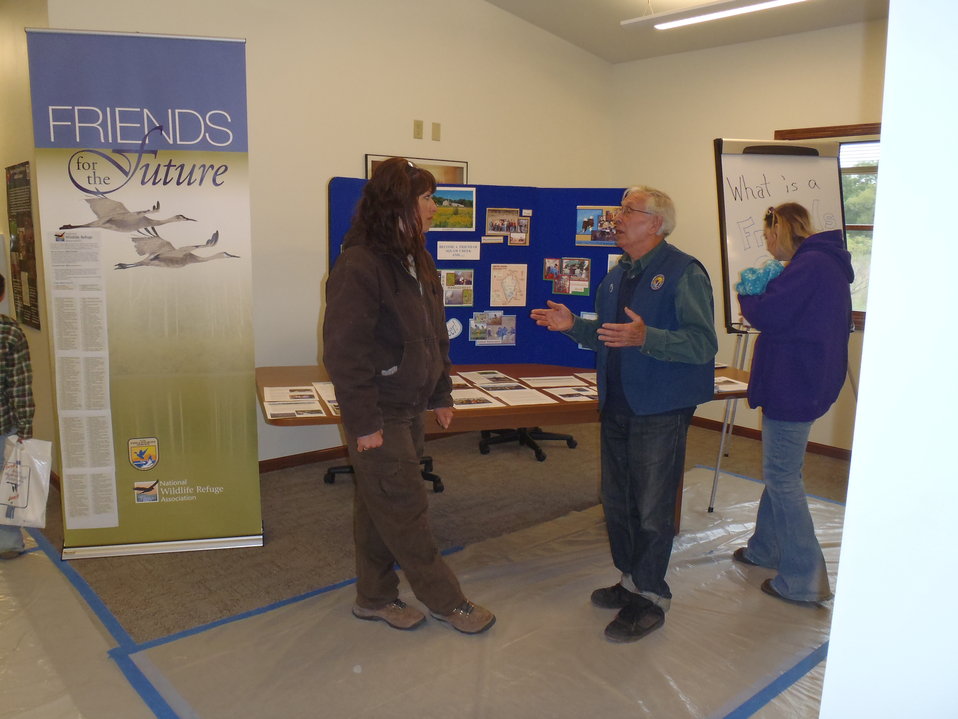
Refuge Staff and Friends Booth